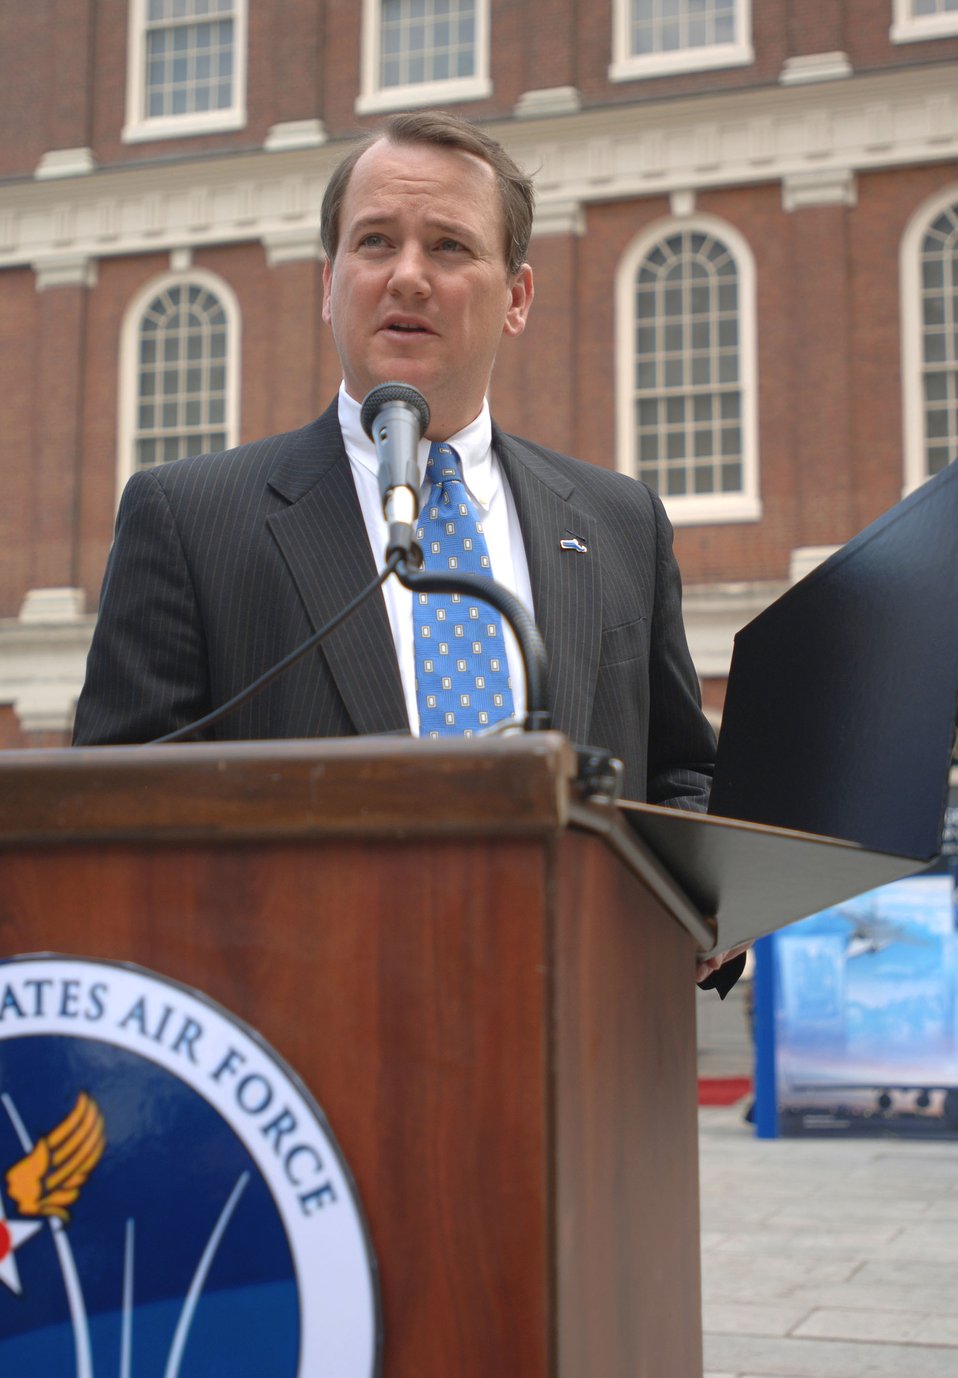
Boston proclamation party gets Air Force Week rolling

Massachusetts Lt. Gov. Timothy P. Murray reads a proclamation signed by Gov. Deval Patrick during a ceremony recognizing Air Force Week New England in front of historic Faneuil Hall in downtown Boston Aug. 17.